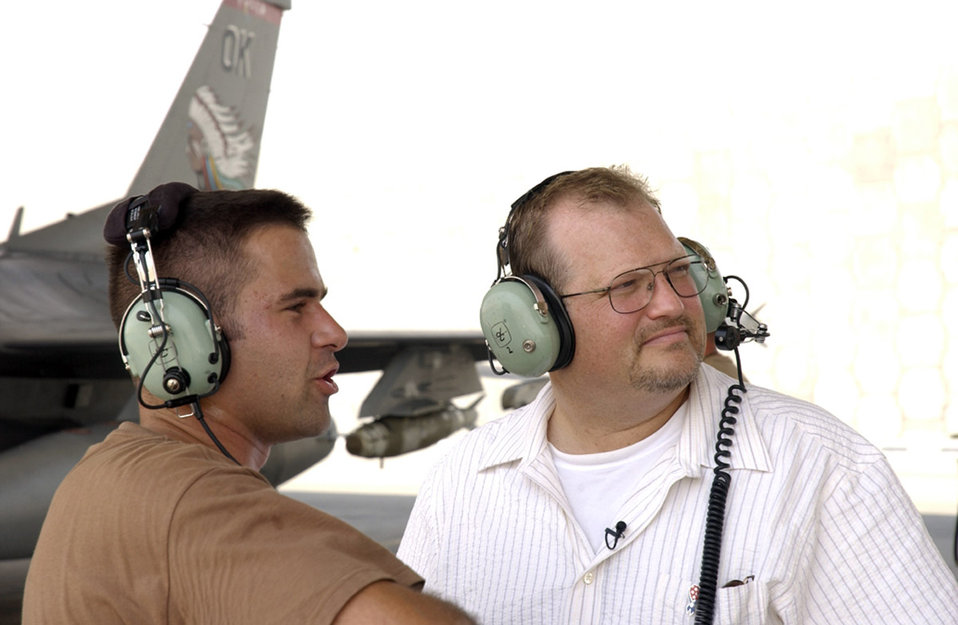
Television star visits troops in Southwest Asia

SOUTHWEST ASIA -- Staff Sgt. Andy Adducchio briefs comedian Drew Carey on his mission responsibilities Aug. 24 at this forward-deployed location. Mr. Carey was part of a five-person comedic team traveling the area to entertain forward-deployed troops. Sergeant Ardducchio is a crew chief with the 180th Aircraft Maintenance Unit and is deployed from the Ohio Air National Guard 's 178th Fighter Wing.